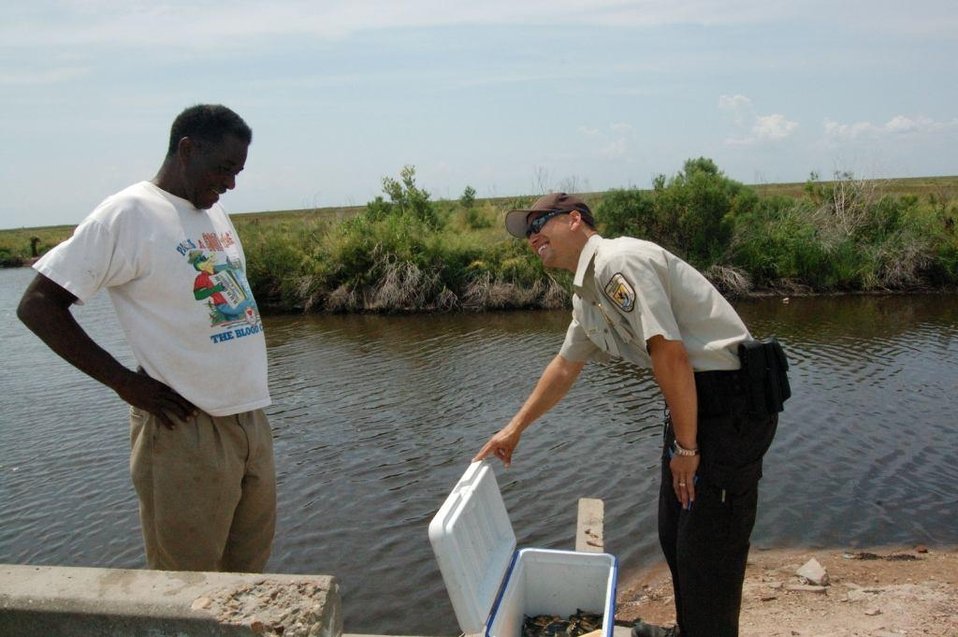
Jimmy Laurent

Refuge Officer Jimmy Laurent conducts a crabbing/fishing compliance check on an ice chest full of blue claw crabs at Big Branch National Wildlife Refuge in Louisiana. Today, Laurent is a collateral duty law enforcement officer as well as refuge manager at Anahauc National Wildlife Refuge in Texas. (USFWS)